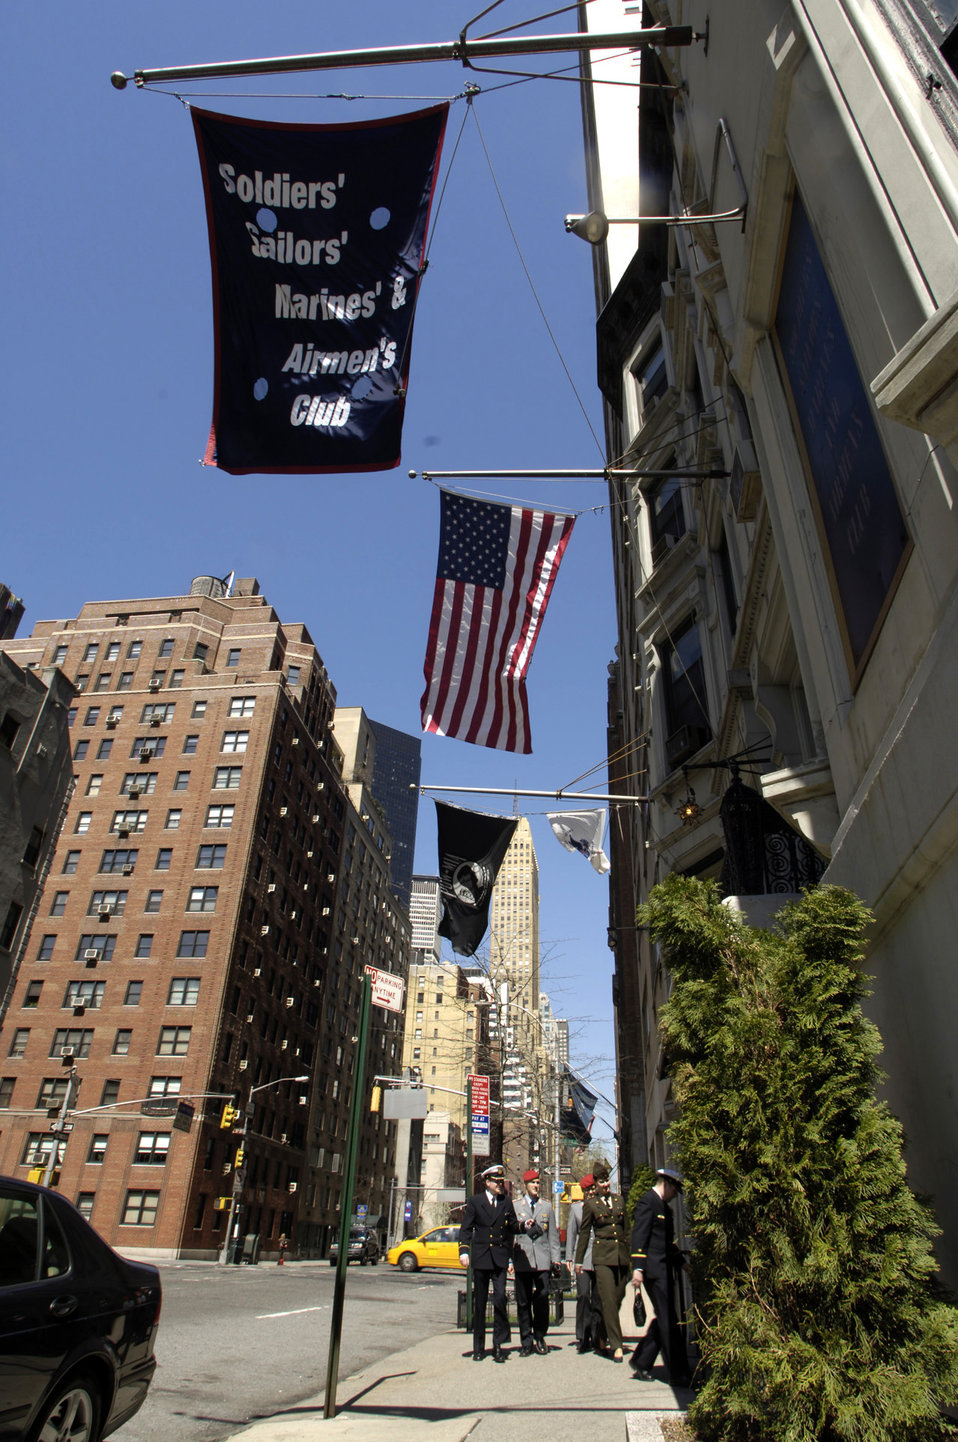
Manhattan's cheapest lodging for 'Those Who Serve'

German and Latvian servicemembers in town for a United Nations conference stop by to see the Soldiers', Sailors', Marines' and Airmen's Club in Manhattan.